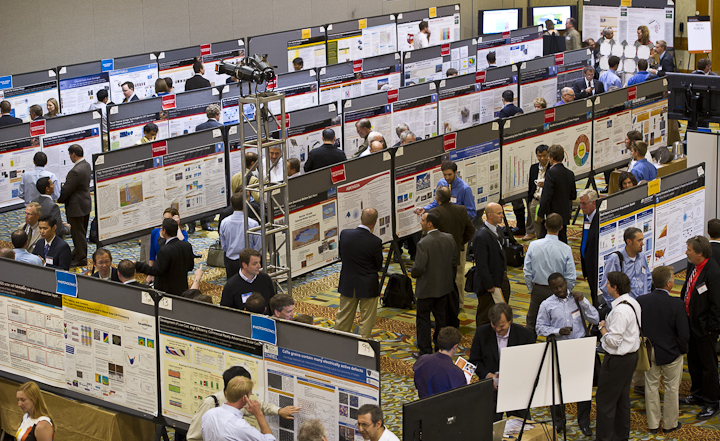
SunShot Poster Session

June 13, 2012- Researchers participate in a poster session at the Technology Forum at the SunShot Grand Challenge Summit and Technology Forum in Denver, Colorado.